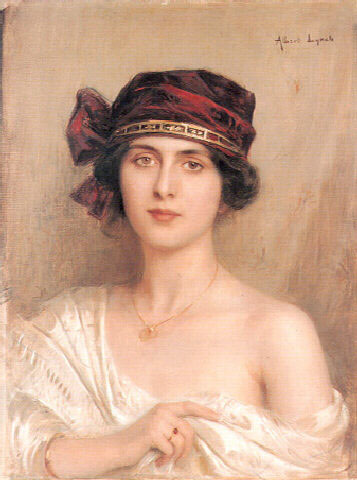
Albert Lynch portrait d'une jeune femme